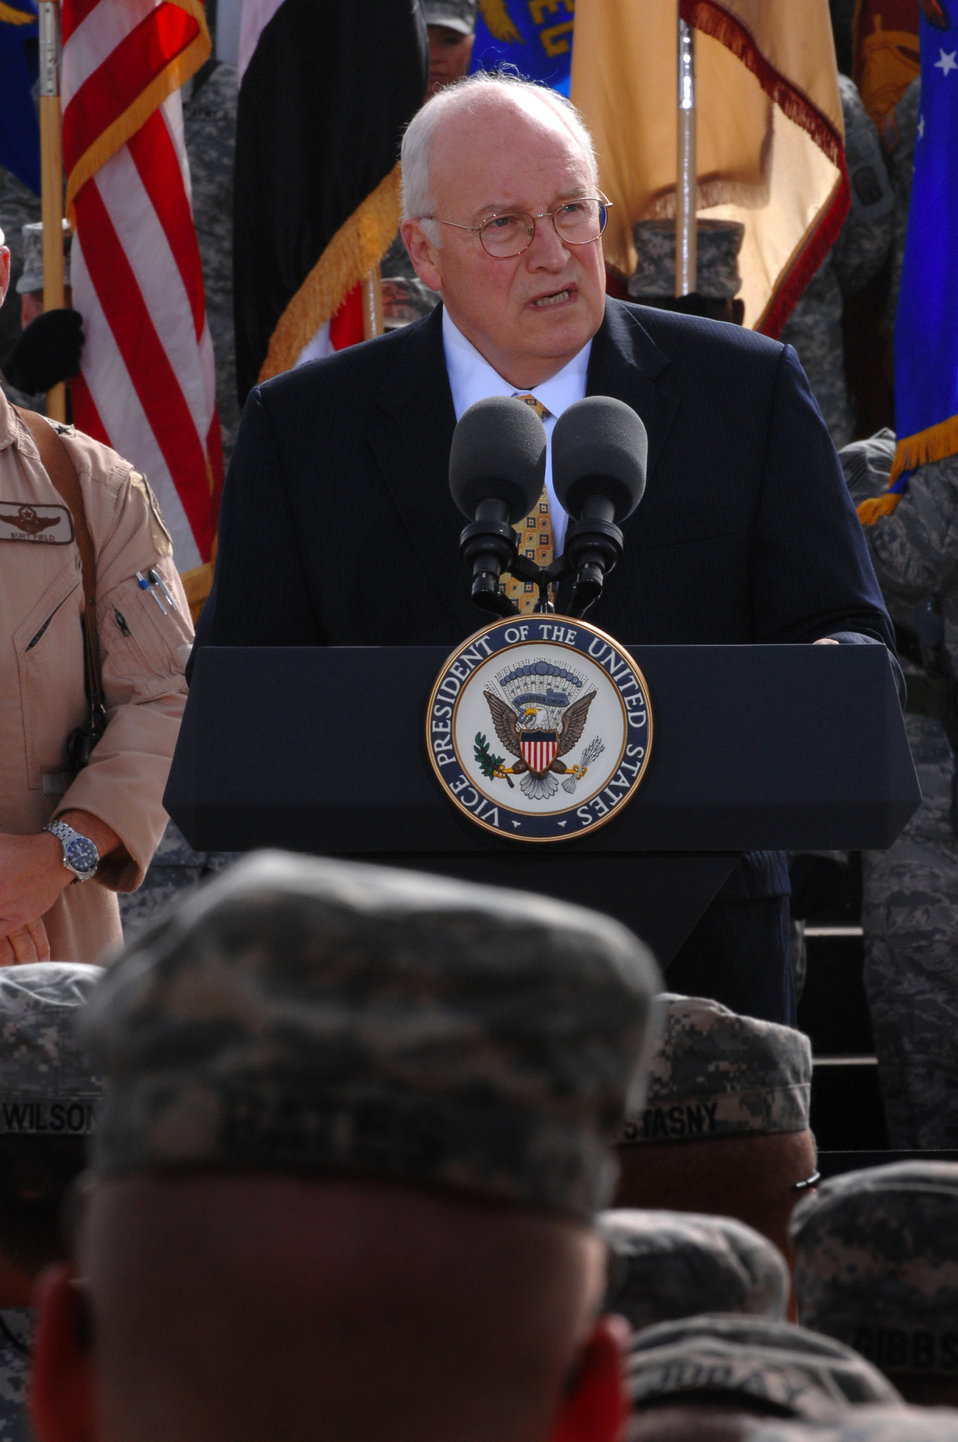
Vice president visits troops at Balad

Vice President Dick Cheney speaks to uniformed servicemembers March 18 at Balad Air Base, Iraq. The vice president came to the base to visit deployed military men and women serving in support of Operation Iraqi Freedom.